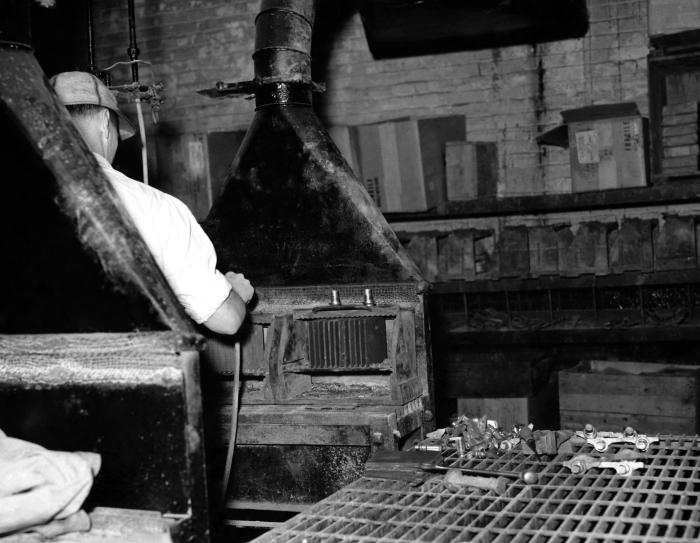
Published in the 'Public Health Bulletin', No. 262, 1941, this historic image, which was provided by the Center for Disease Control's (CDC), National Institute for Occupational Safety and Health (NIOSH), depicted a battery factory in which a worker was in the process of fusing the lead-acid battery assembly into a stable, self-contained unit using a blowtorch. Note the inclusion of an exhaust system situated in close proximity to the action at hand. As a device containing both lead, a toxic heavy metal, and acid, in the form of sulfuric acid, batteries are potentially dangerous, both in their finished state, as well as during their manufacture. Precautions need be taken when building a battery, including the use of goggles, gloves, and filtered breathing devices. This worker may have been wearing what appeared to be protective goggles, however, though advisable, it was not known if he was wearing a filtered mask, and he was not wearing gloves.